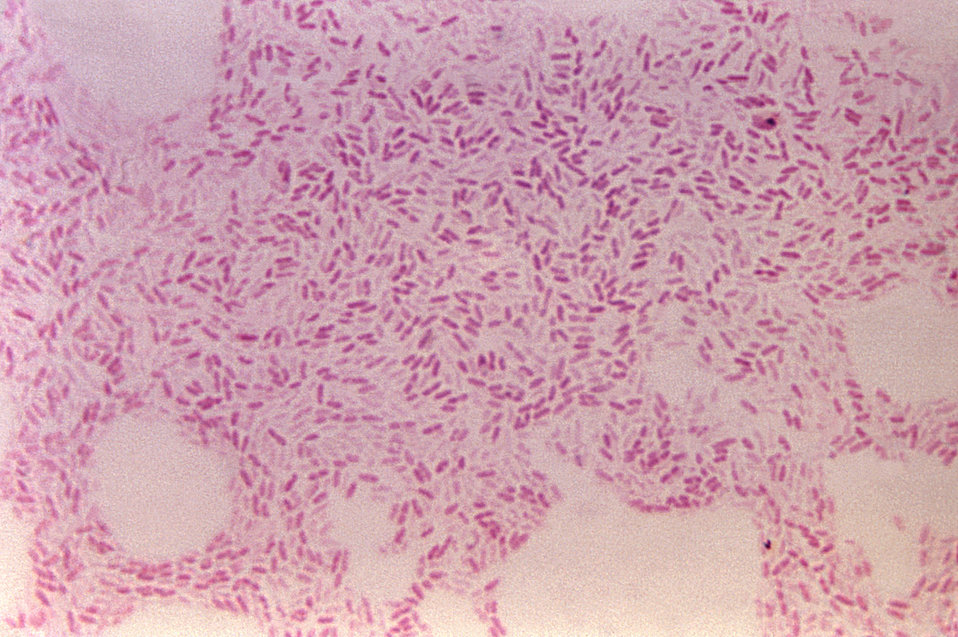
This micrograph depicts Bacteroides clostridiforme bacteria cultured in blood agar medium for 48 hours.